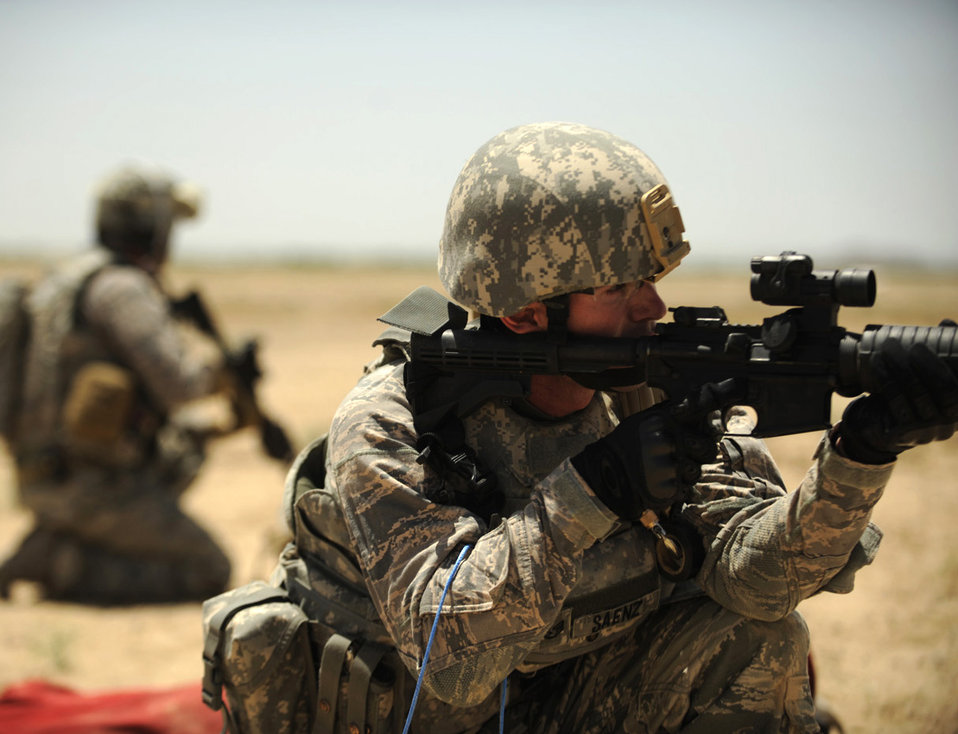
Kandahar Airmen protect servicemembers from IEDs

Staff Sgt.Scott Saenz conducts security during joint explosive ordnance training May 5 at Kandahar Airfield, Afghanistan. Sergeant Saenz is an explosive ordnance disposal technician with the 755th Explosive Ordnance Disposal unit.